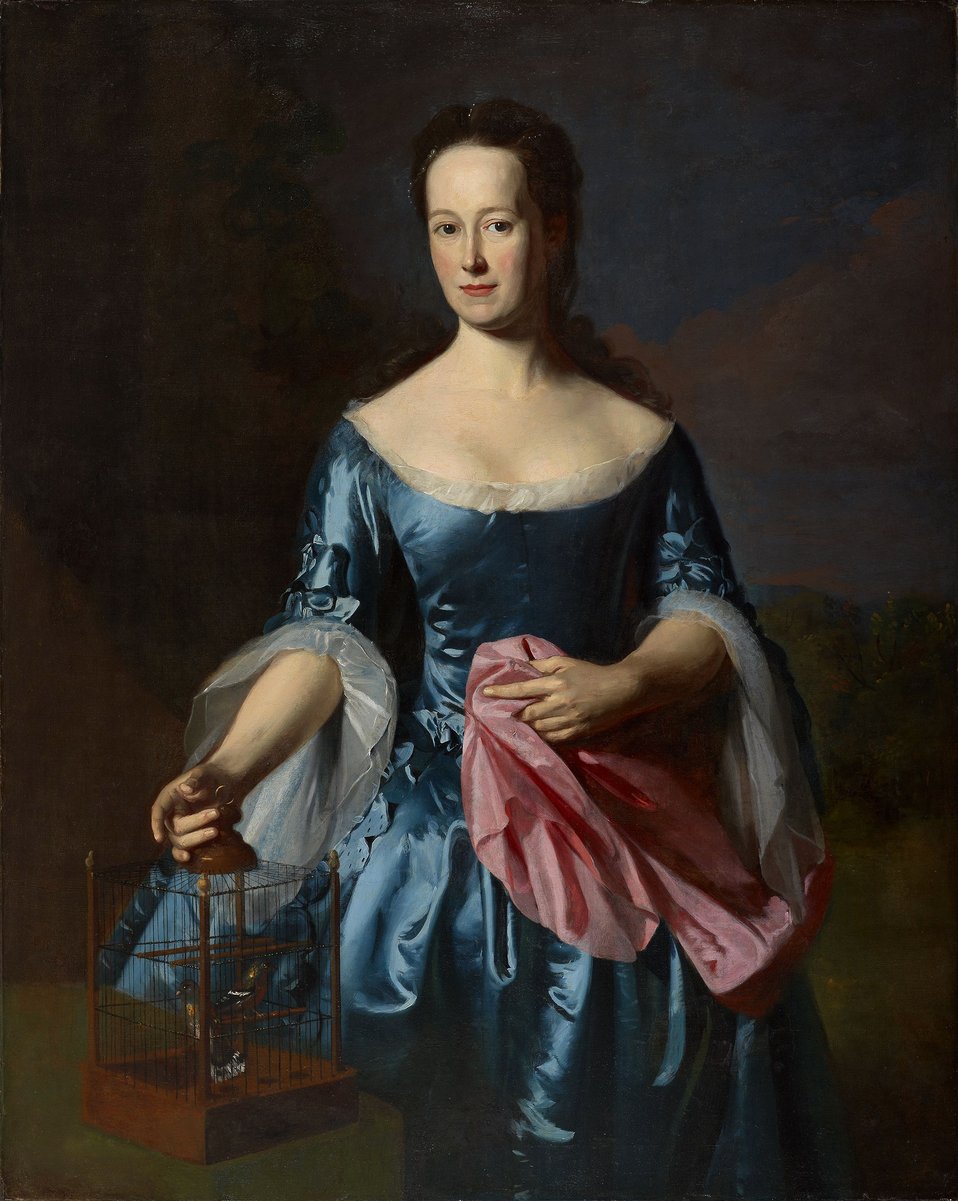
Copley MrsMetcalfBowler